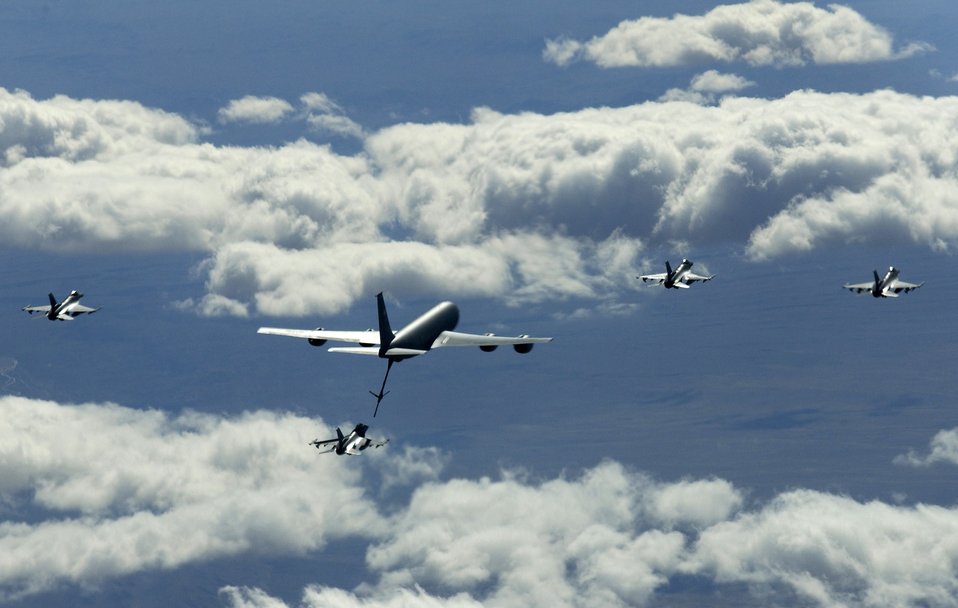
Airmen hone skills at Red Flag

Four F-16 Fighting Falcons fly in formation with a KC-135 Stratotanker during refueling operations Oct. 19 at Red Flag 07-1. The exercise was held at Nellis Air Force Base, Nev., Oct. 10 to 20.